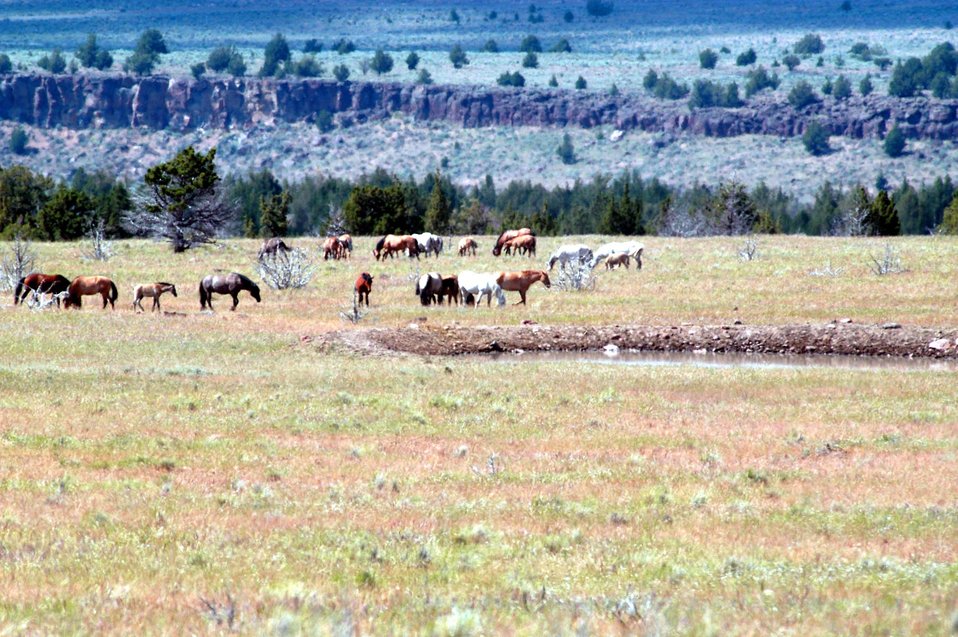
Kiger horses roam the plateaus of the Kiger Wildhorse Herd Management Area near Steens Mountain in Southeastern Oregon.